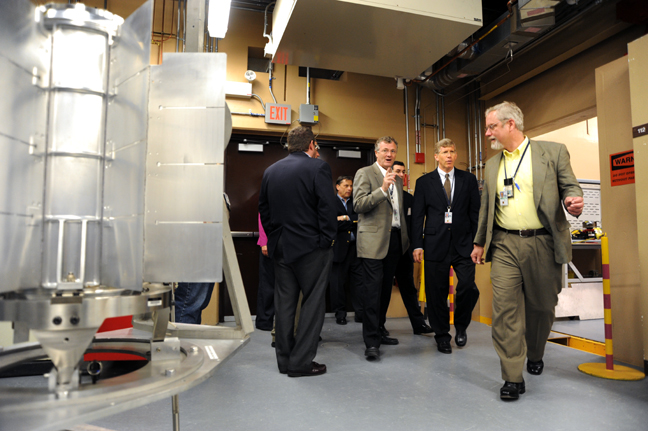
P-6250-25 72dpi